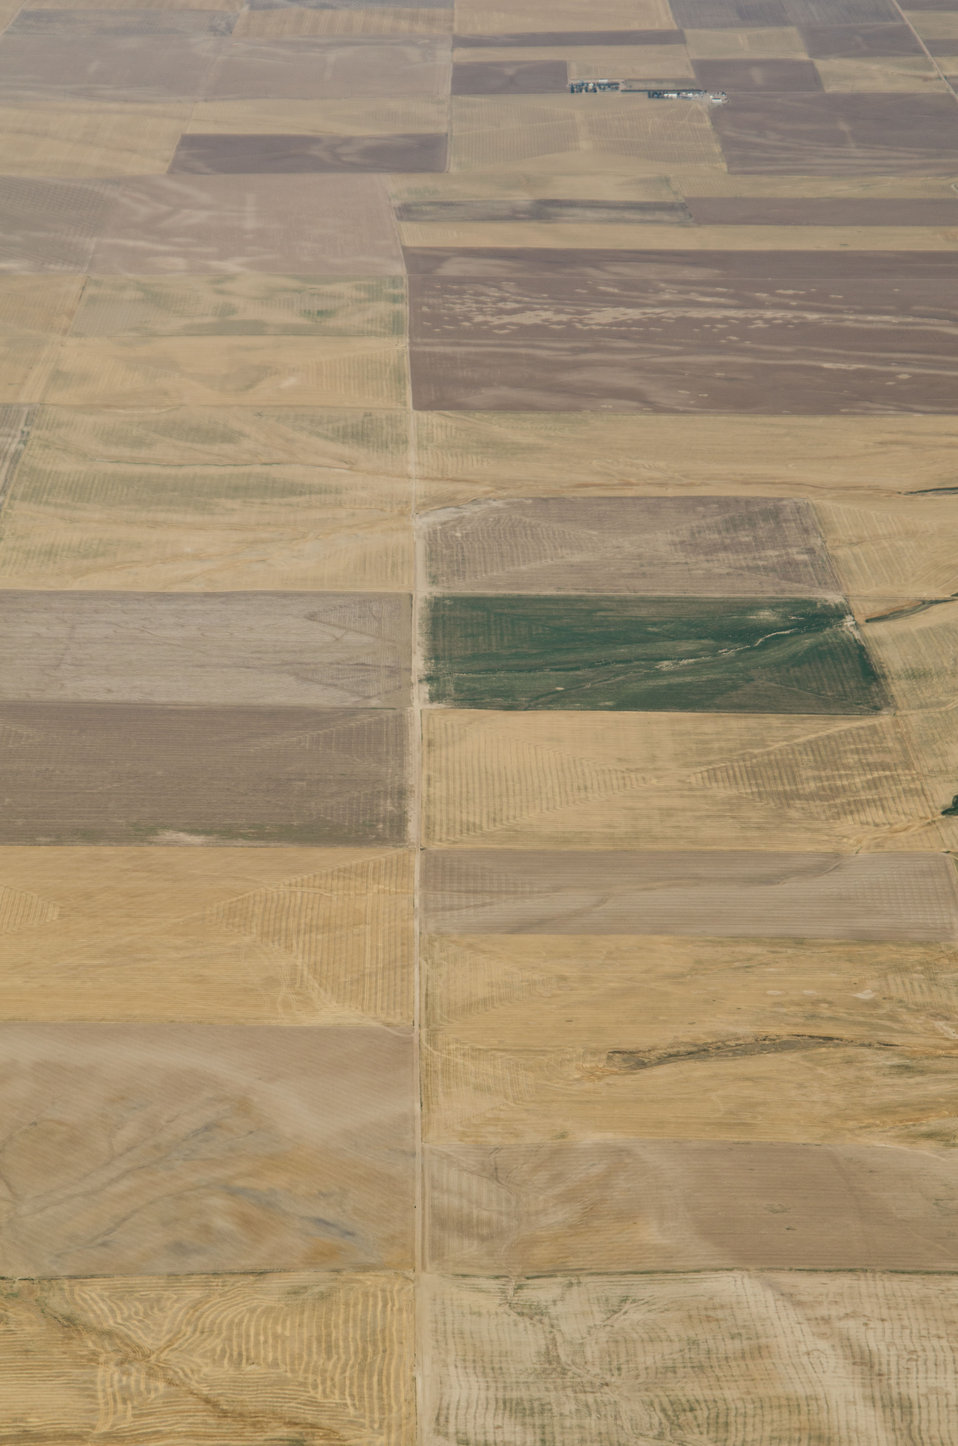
Aerial views of drought affected Colorado farm lands, 89 miles east of Denver, Colorado on Saturday, July 21, 2012. Green areas are irrigated, the yellow areas are dryland wheat crops.